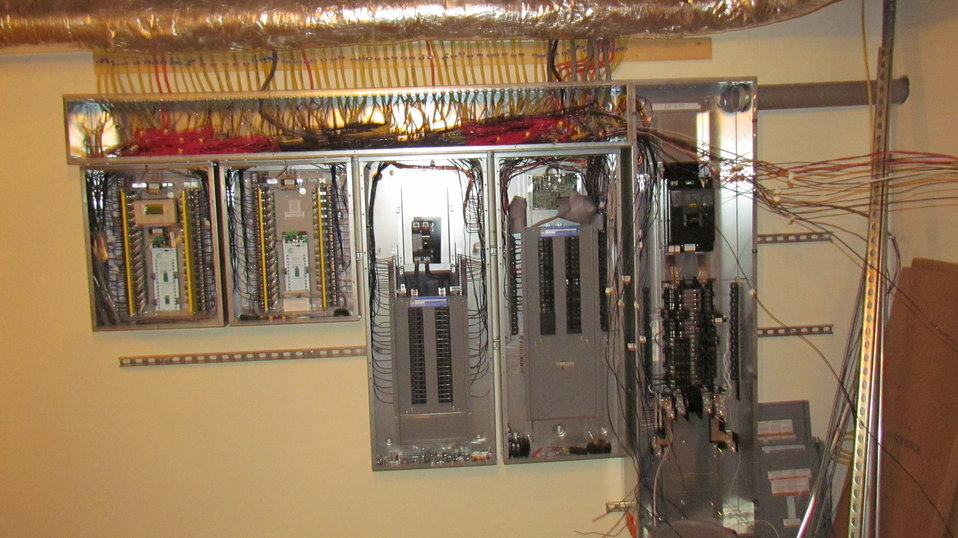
Individual circuit wires have been attached to appropriate circuit breakers with switch panels. The two smaller panels on the left interface the circuit breakers to the computer based data acquisition and control system in the garage. The combined system permits computer control of the various electrical circuits within the house.